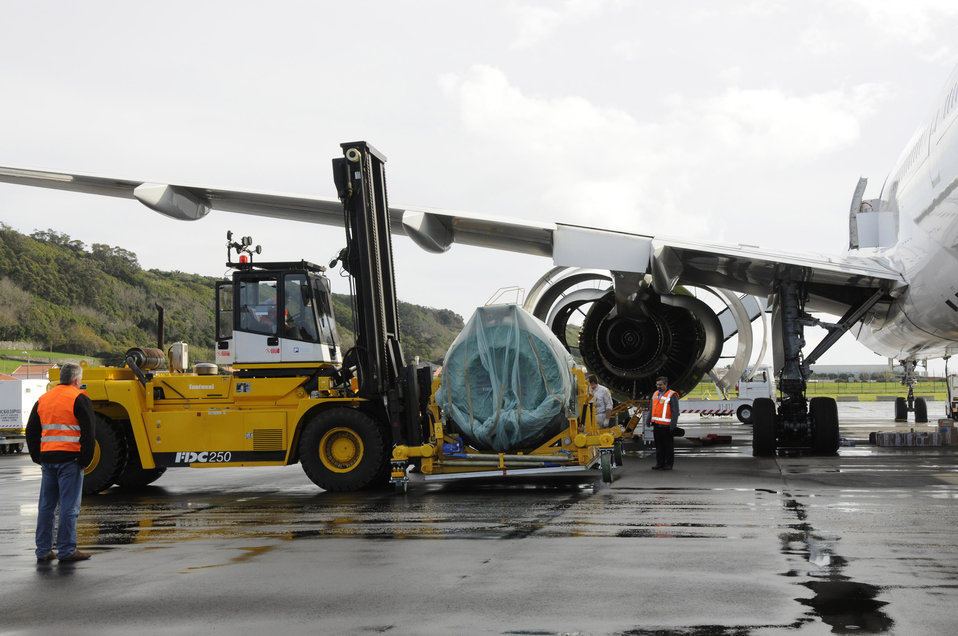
Lajes Field Airmen help disabled French aircraft

Members of the 838th Transportation Battalion of the Azores Detachment use a forklift to support Air France maintainers move a new 22,000-pound engine for a downed Air France 777 Jan. 6 at Lajes Field, Azores. The aircraft was diverted to Lajes Field Jan. 4. Airmen from Lajes Field and members of the 838th Transportation Battalion were asked to provide support because local commercial airlines here only have lift equipment that can handle up to 15,000 pounds, did not have the capability to support Air France.